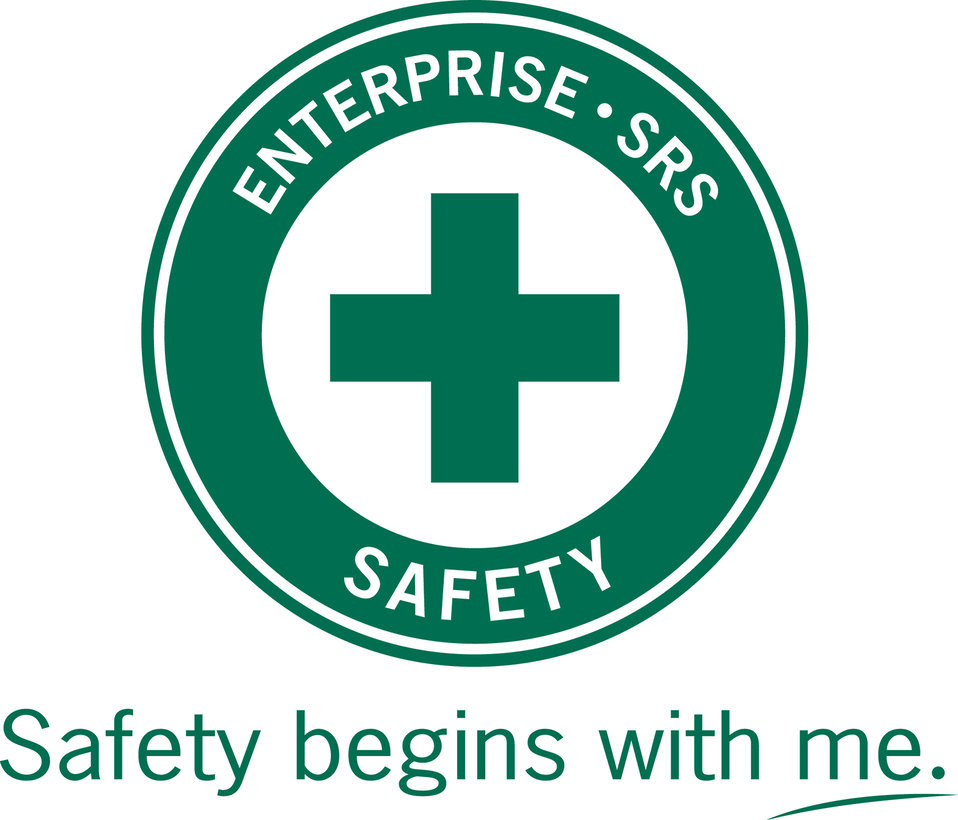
Safety at Savannah